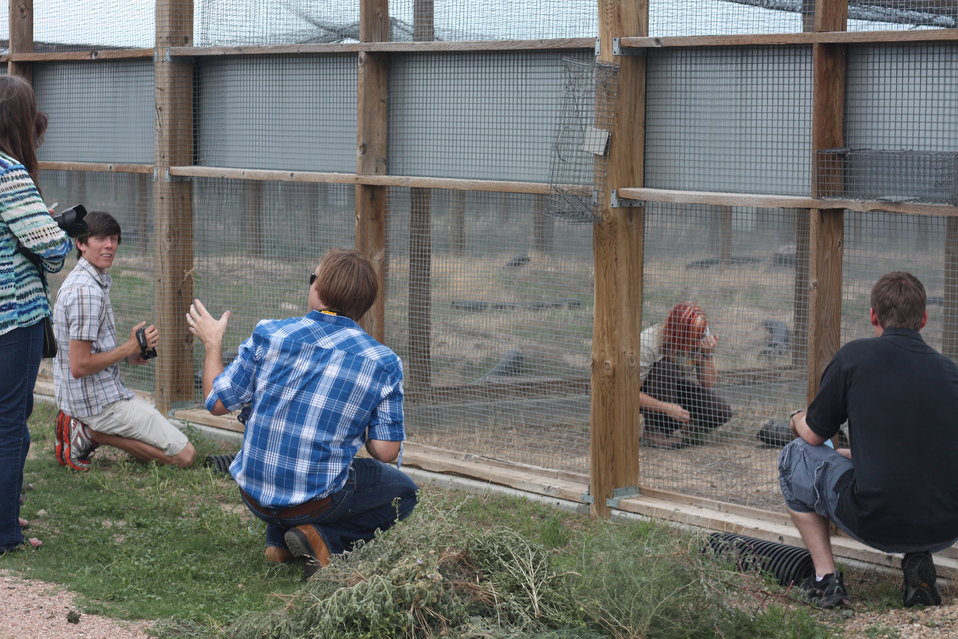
Interns visit the NBFFCC

In the summer of 2012, USFWS Region 6 interns visited the National Black-footed Ferret Conservation Center (NBFFCC) in Colorado to learn how the program reintroduces the endangered Black-footed ferret back into its native habitat.

Pictured here, Kimberly Tamkun and Robyn Bortner (NBFFCC Employees) show the outdoor preconditioning pens to Ryan and the interns.